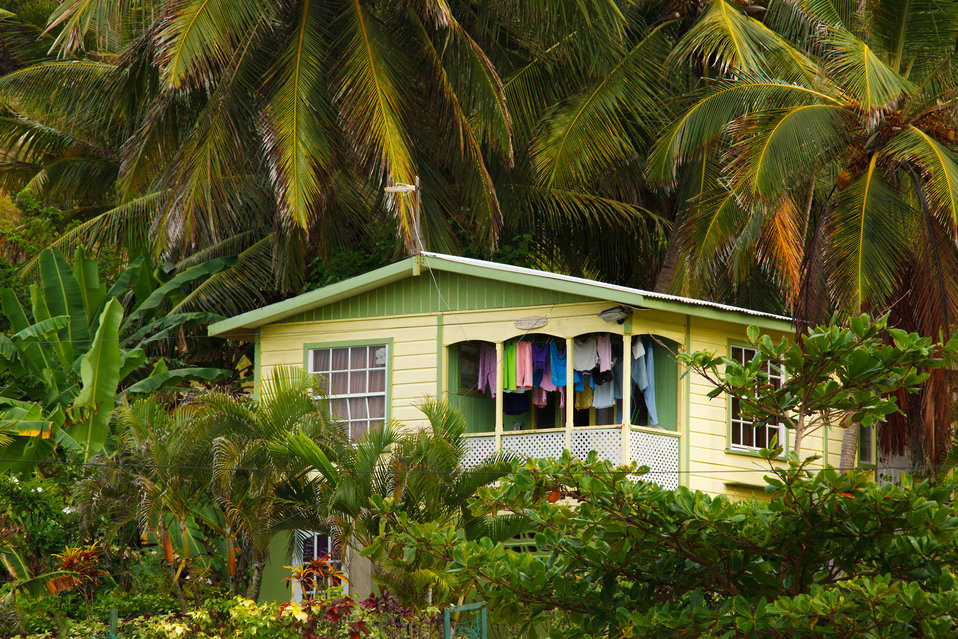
House in tropical forest

Small house in tropical forest.